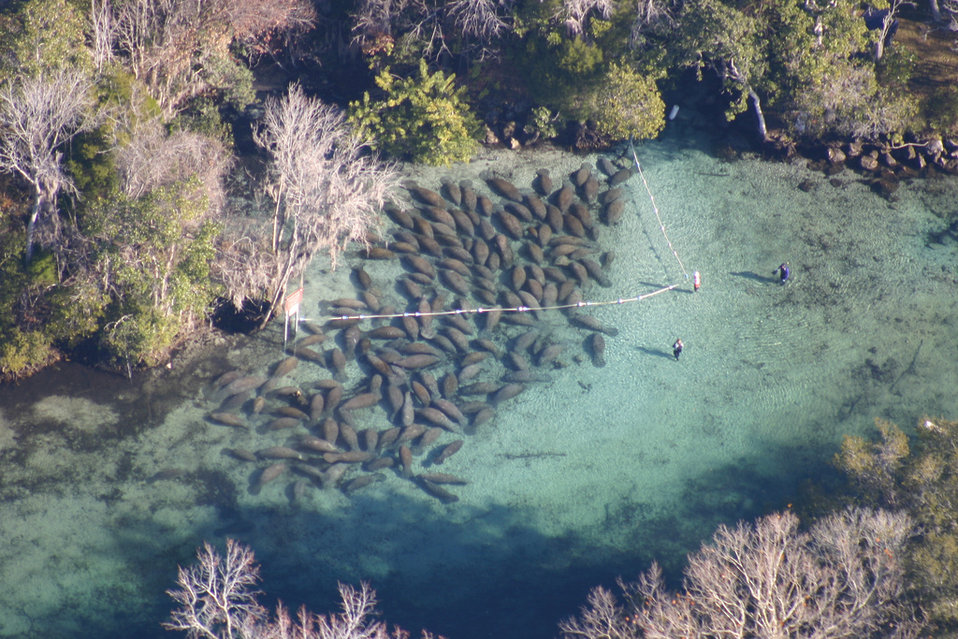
Endangered Florida manatee (Trichechus manatus)

Photo credit: Joyce Kleen

This image , taken in mid January this year at the King Spring in Crystal River NWR, shows manatees resting at Tarpon Hole (left) and King Spring (right) during a 30 degree F day.

The Crystal River National Wildlife Refuge, was established in 1983 specifically for the protection of the endangered West Indian Manatee. This unique refuge preserves the last unspoiled and undeveloped habitat in Kings Bay, which forms the headwaters of the Crystal River. The refuge preserves the warm water spring havens, which provide critical habitat for the manatee populations that migrate here each winter.